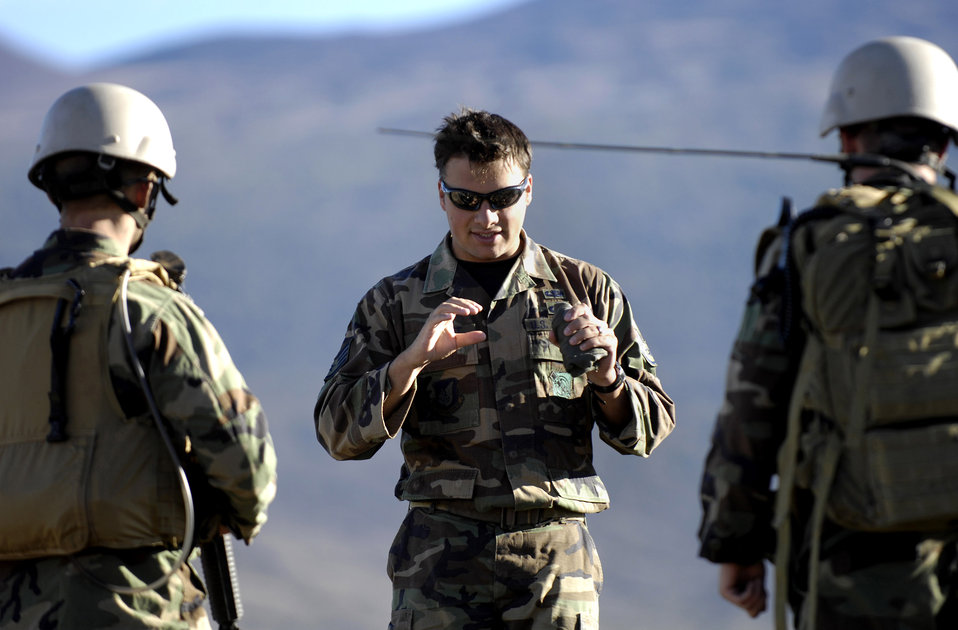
TACPs participate in excercise

Staff Sgt. George Earhart reviews advanced self-aid buddy care and medical evacuation training with Airmen Oct. 23 at the Pohakuloa Training Area on the big island of Hawaii. The Airmen are tactical air control party members from the 25th Air Support Operations Squadron, Wheeler Army Airfield, Hawaii. The TACPs are training as part of the Koa Lighting exercise where bombers fly from Guam and practice their targeting.